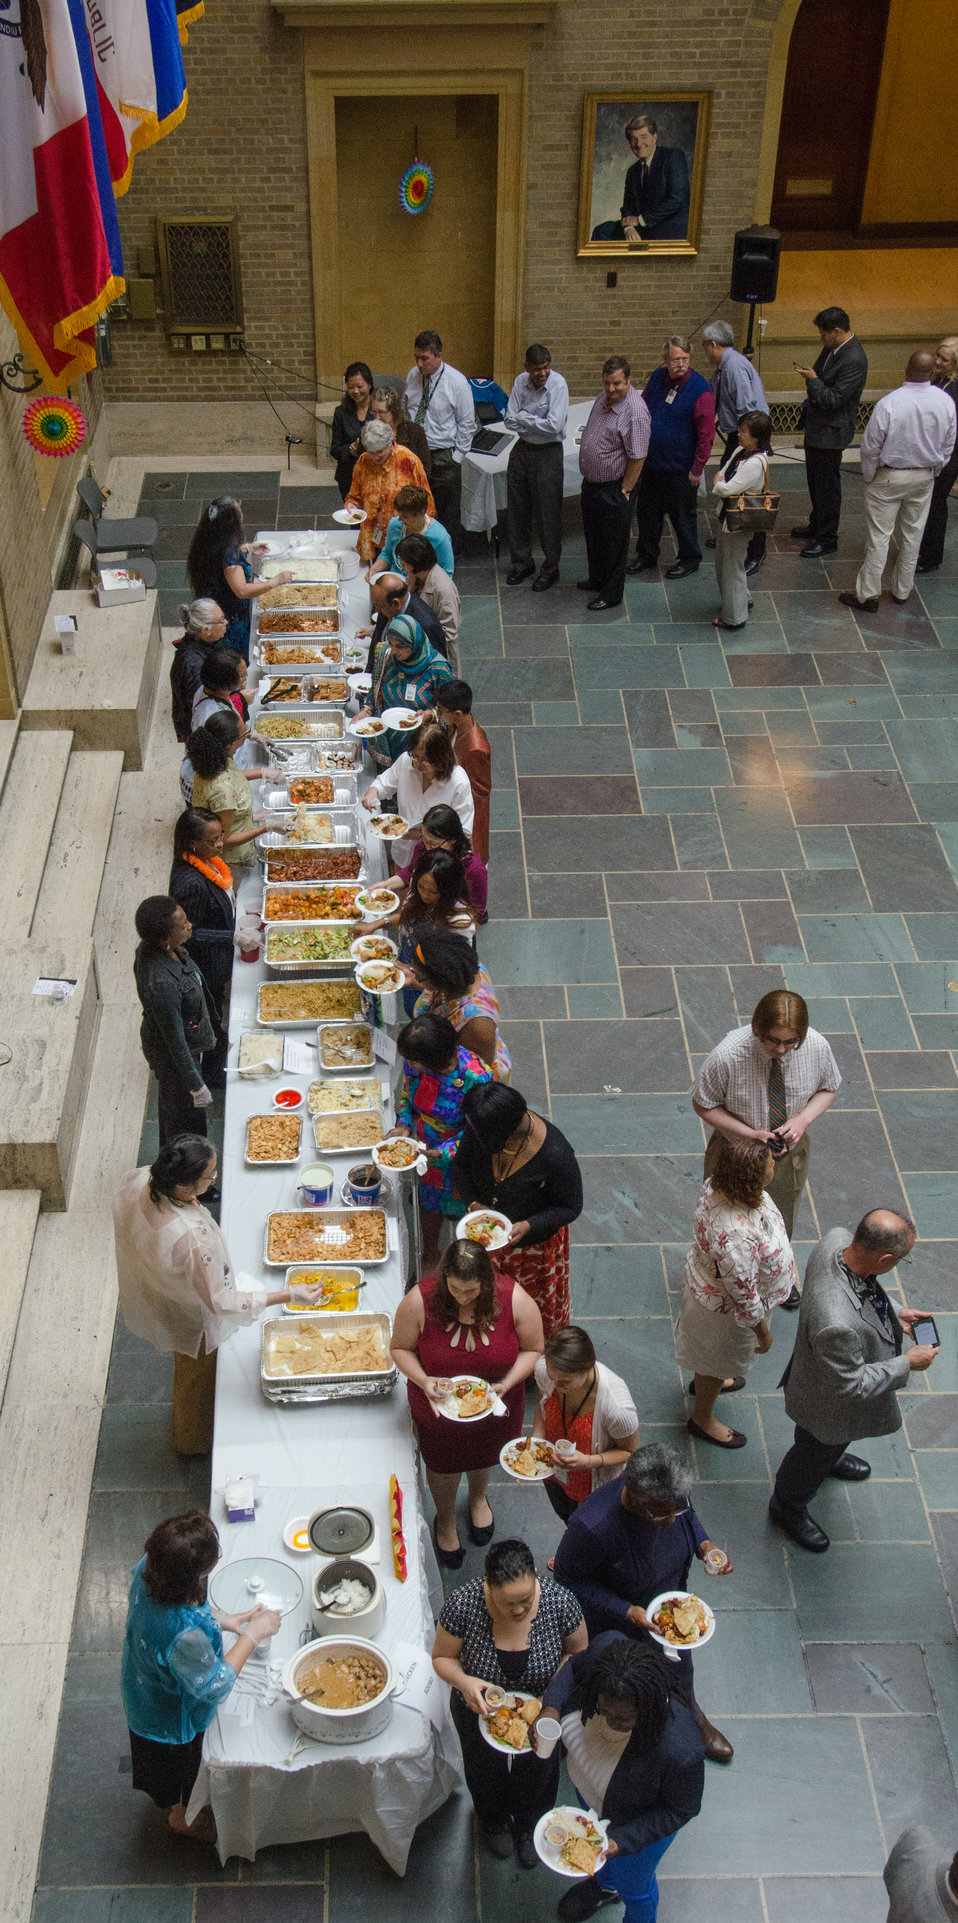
A long line forms for a taste of a dozen different Asian and Pacific Islander foods during the U.S. Department of Agriculture’s (USDA) Asian Pacific American Heritage Month Observance, at the USDA headquarters in Washington, D.C., on Thursday, May 23, 2013. This year’s theme is “Building leadership; Embracing the Cultural Values and Inclusions.”